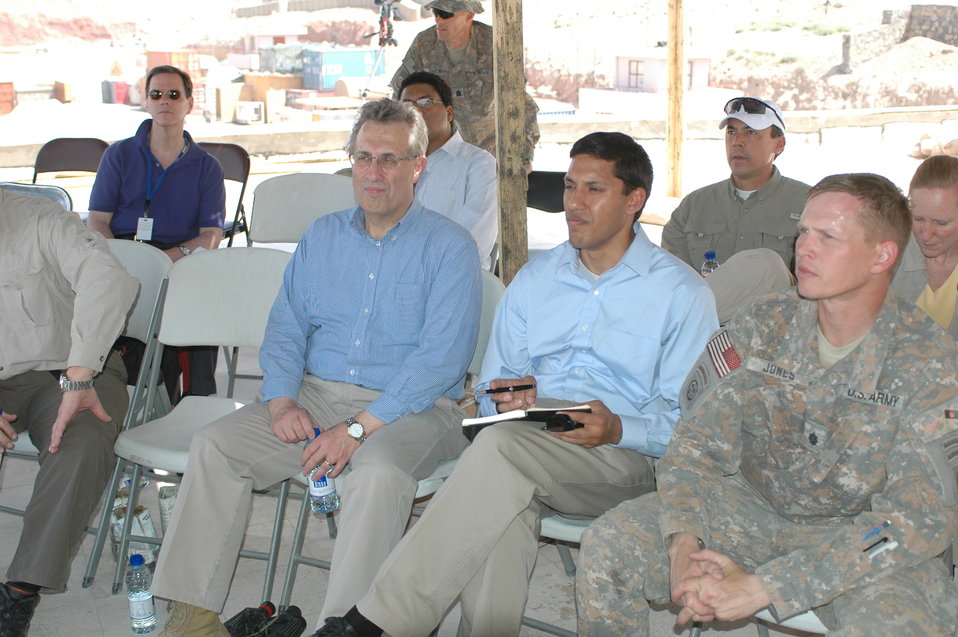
Dr Shah Visits Kandahar April 9, 2010